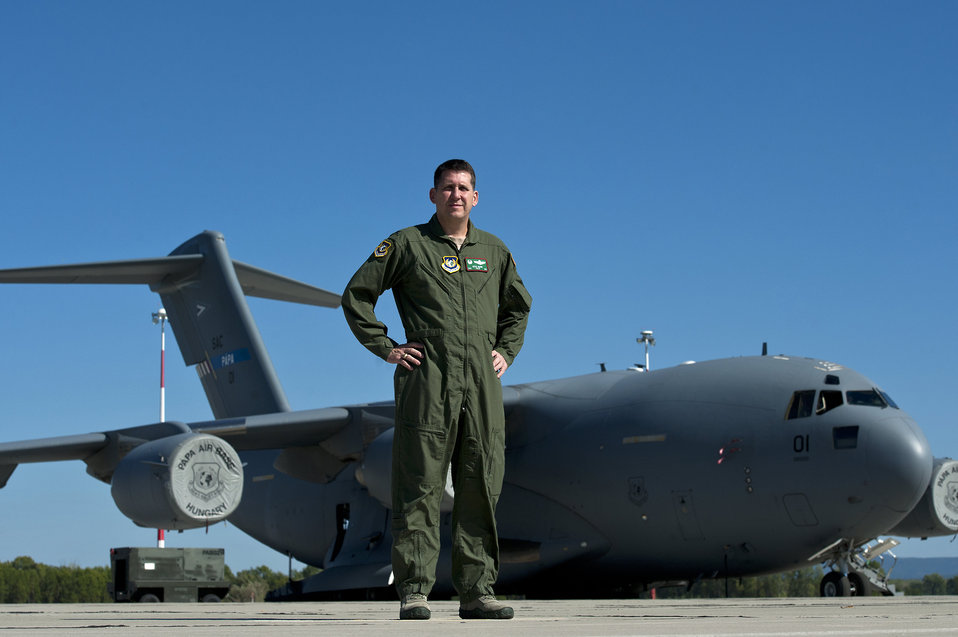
Papa AB, Hungary

Col. Keith Boone, Heavy Airlift Wing Commander, oversees the strategic airlift operations and personnel of 12 different nations of the Strategic Airlift Capability Program at Papa Air Base, Hungary.